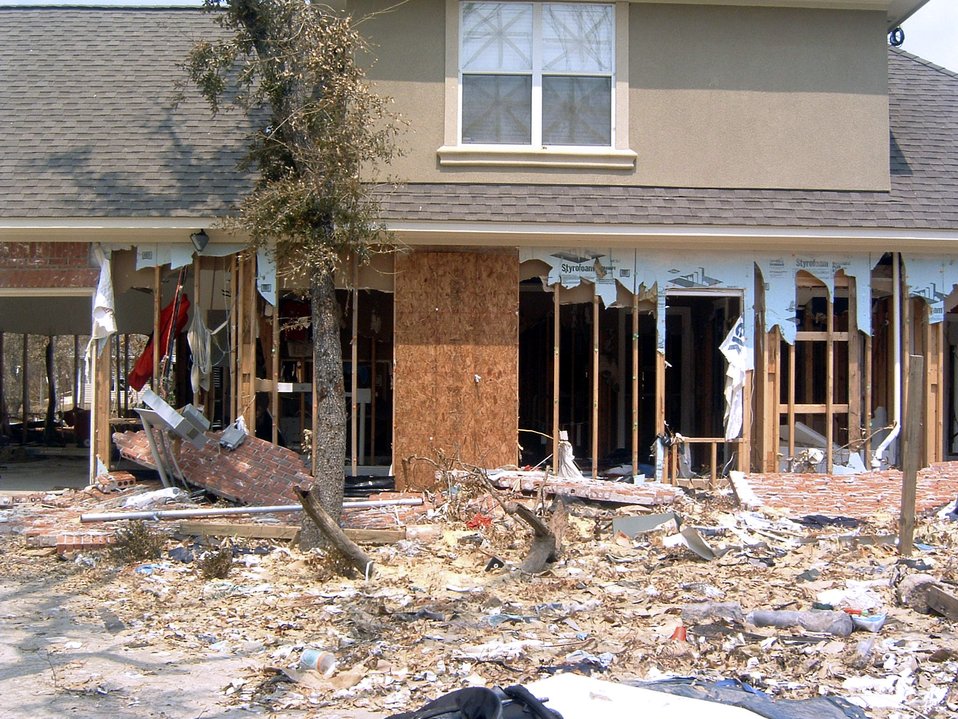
Reserve family faces uncertainties after hurricane

OCEAN SPRINGS, Miss. -- Hurricane Katrina ripped away brick and sheetrock from the first floor of the Senior Master Sgt. David Hufton's home here but left the second floor seemingly unscathed. He and his family had not even lived in the house for a month before it was destroyed by the hurricane. The intelligence analyst with the 403rd Wing at Keesler Air Force Base, Miss., is staying with his family at a hotel near Dobbins Air Reserve Base, Ga.